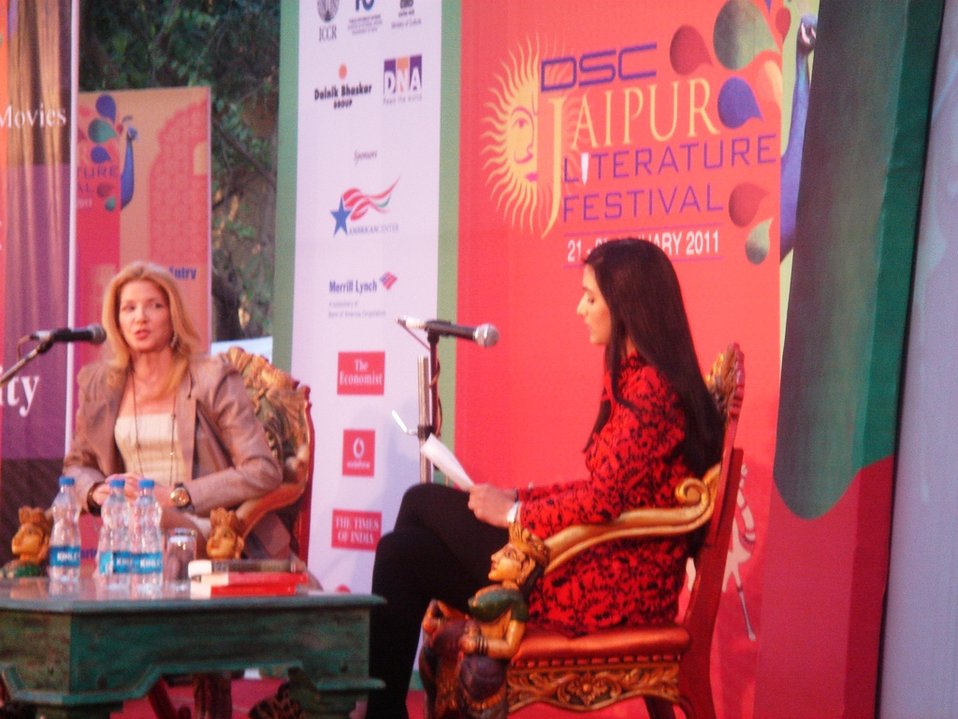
The New York Times Best-Selling Author Candance Bushnell Is Interviewed

The New York Times best-selling author Candace Bushnell is interviewed at the Jaipur Literature Festival in Jaipur, India, in January 2011.